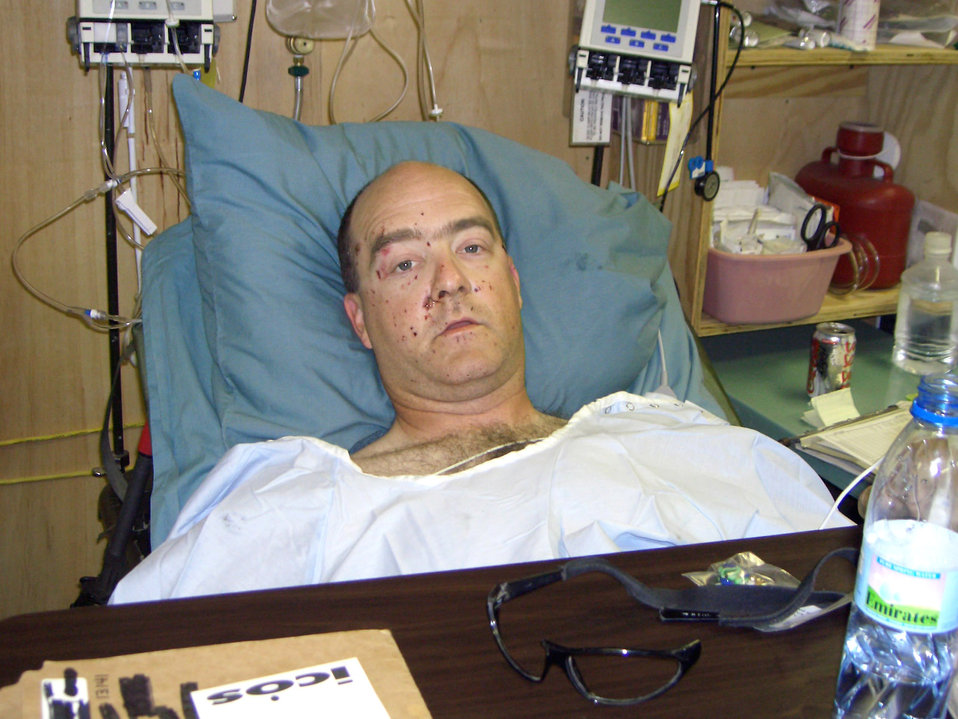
Mine explosion puts two Airmen on different paths to recovery

Maj. Matthew Conlan recovers at the hospital at Bagram Air Base, Afghanistan, a year ago. He had been seriously injured in a land mine blast. His safety glasses (foreground) were destroyed, but they protected his eyes from serious damage.